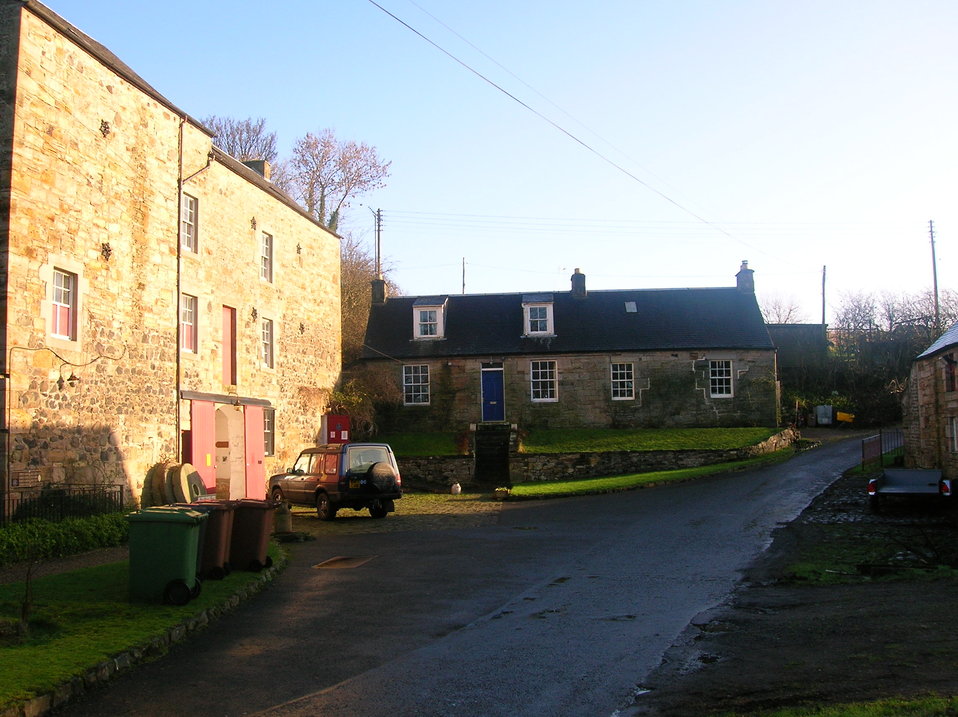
The front of Dalgarven Mill, Kilwinning, Ayrshire. 2007